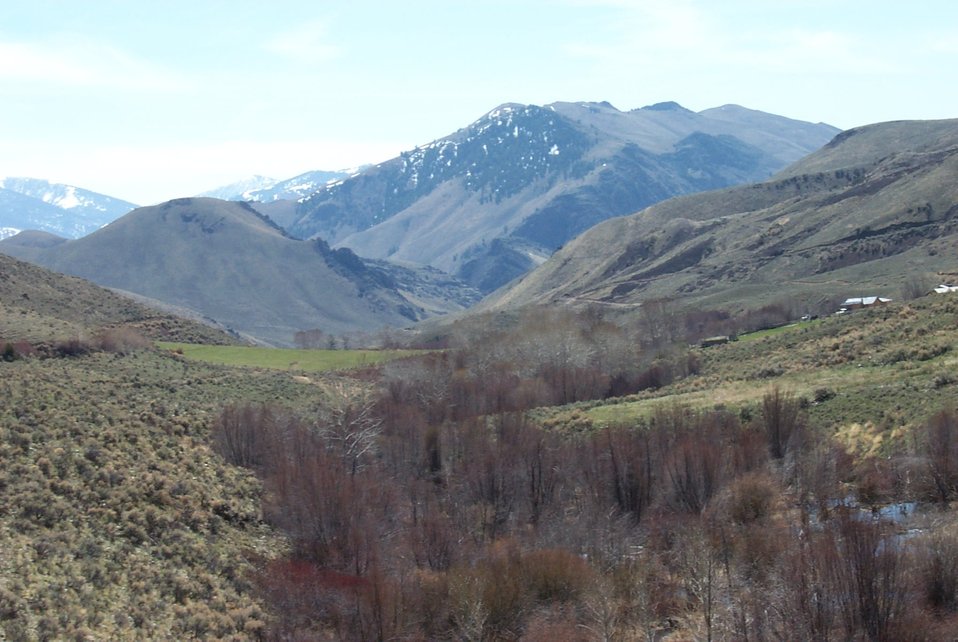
Salmon Field Office Realty Public access Exchange UCSC Upper Columbia Salmon Clearwater District